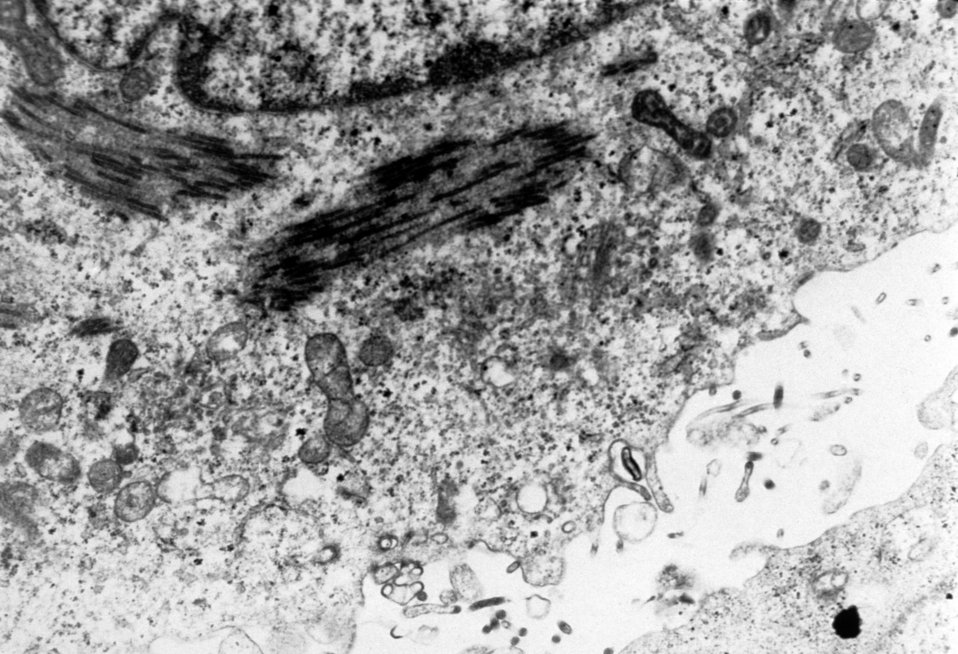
This electron micrograph shows a thin section containing the Ebola virus, the causative agent for African Hemorrhagic Fever.